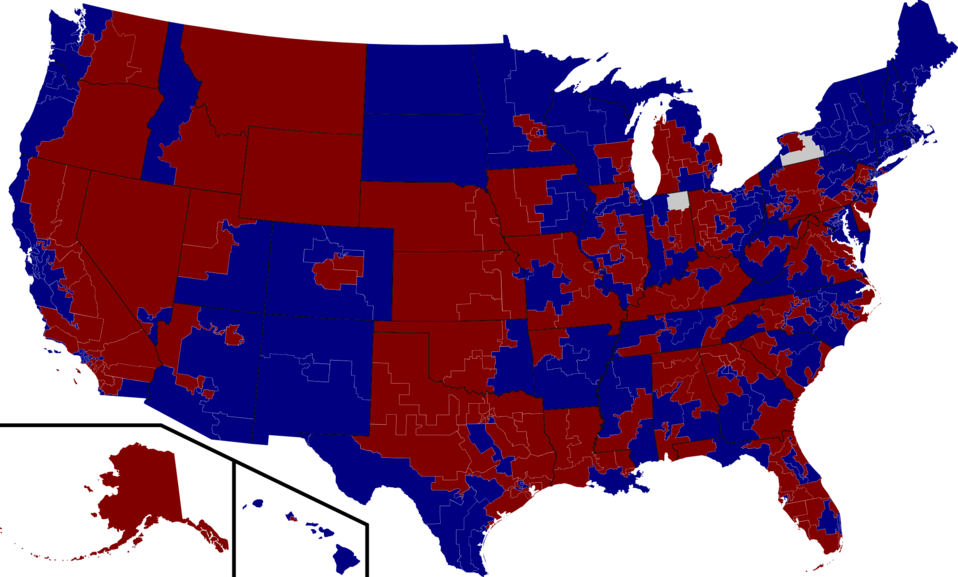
Map of the 111th United States Congress by district